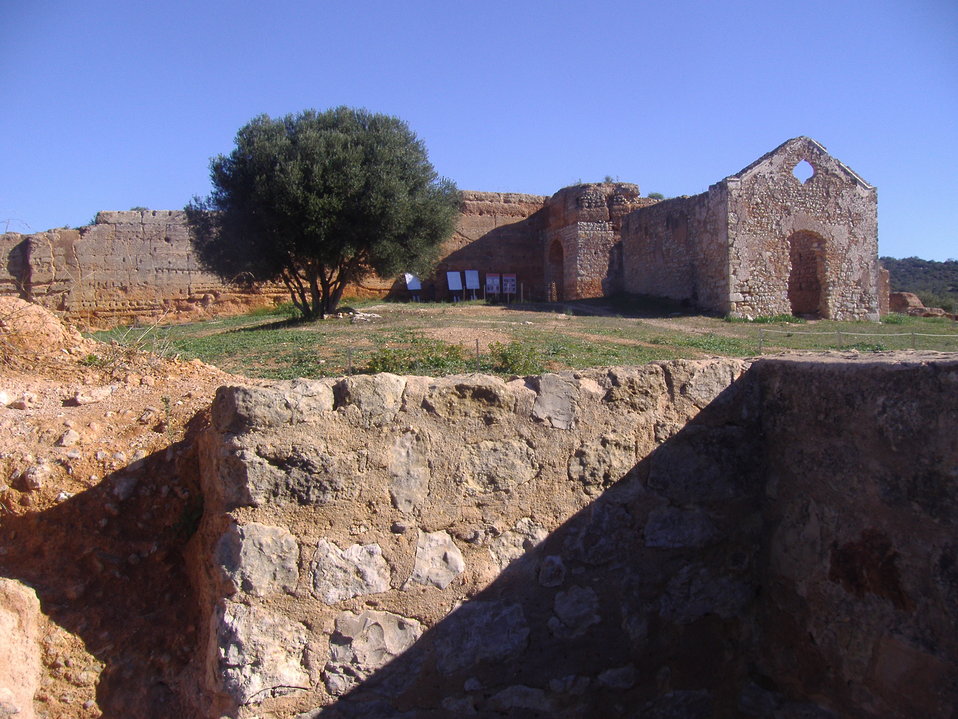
Paderne castle - The ruined Chapel of Nossa Senhora do Castelo